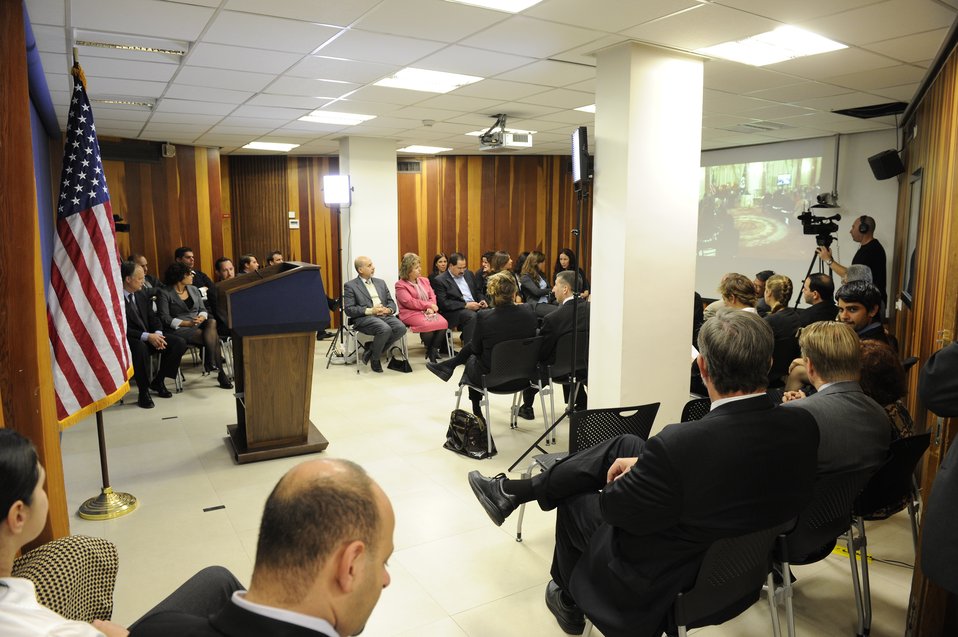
Ambassador Cunningham, Consul General Rubinstein, and CISCO Senior Manager Abzuk Celebrate the ACE Award in Jerusalem

U.S. Ambassador to Israel James Cunningham, U.S. Consul General to Israel Daniel Rubinstein, and Cisco Senior Manager Zika Abzuk, linked via digital video conference with the Secretary of State's Award for Corporate Excellent (ACE) event in Washington, D.C., celebrate the Award at a Jerusalem event in Israel, December 17, 2010. [State Department photo/ Public Domain]

At a Jerusalem event, linked via digital video conference with the Secretary's event, U.S. Ambassador James Cunningham, U.S. Consul General Daniel Rubinstein, and Cisco Senior Manager Zika Abzuk celebrate the Award.

Cisco, the computer networking company, was chosen for helping to connect the Israeli and Palestinian economies and people, and engaging in several partnerships and initiatives to enhance technical capacity, connectivity, education, and opportunities for women and youth in Israel, the West Bank and Gaza.